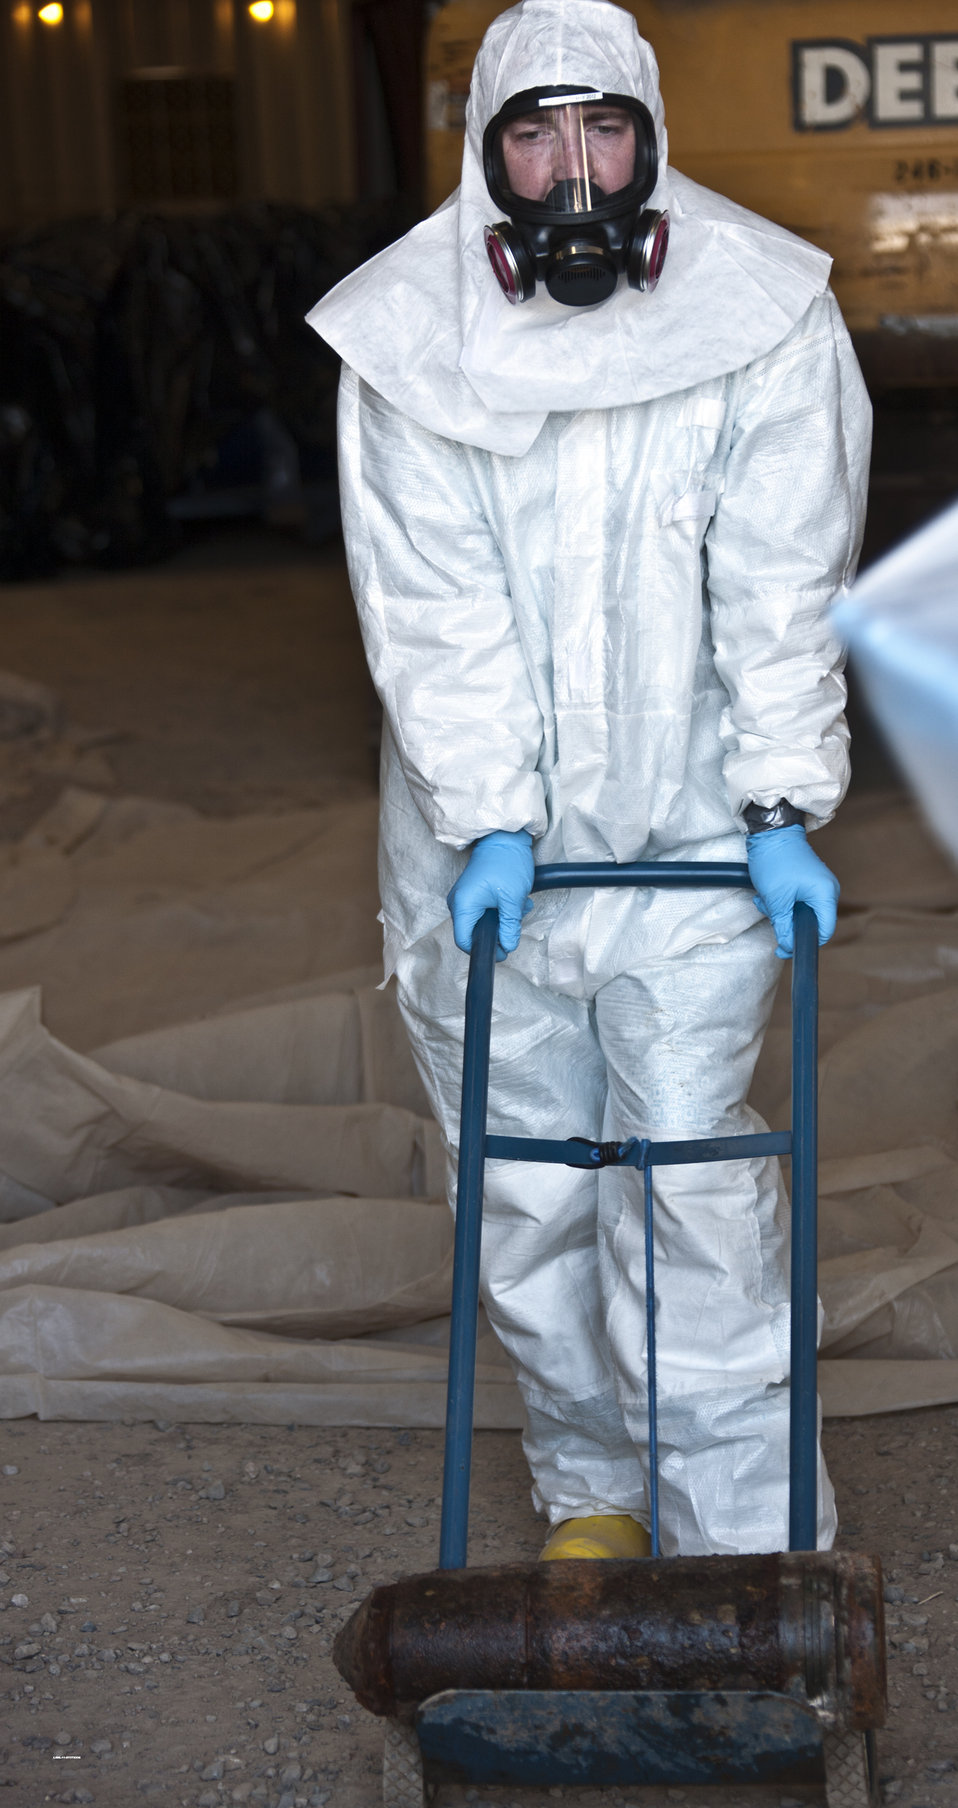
Los Alamos Dig Unveils Items Ranging from Military Trucks to Toothbrush

Workers found inert naval artillery shells in MDA-B.

In a $110 million Recovery Act project at Los Alamos National Laboratory, workers are excavating a waste disposal site known as Material Disposal Area B (MDA-B). Completion of the MDA-B cleanup will reduce EM’s legacy footprint by more than 260,000 square feet.